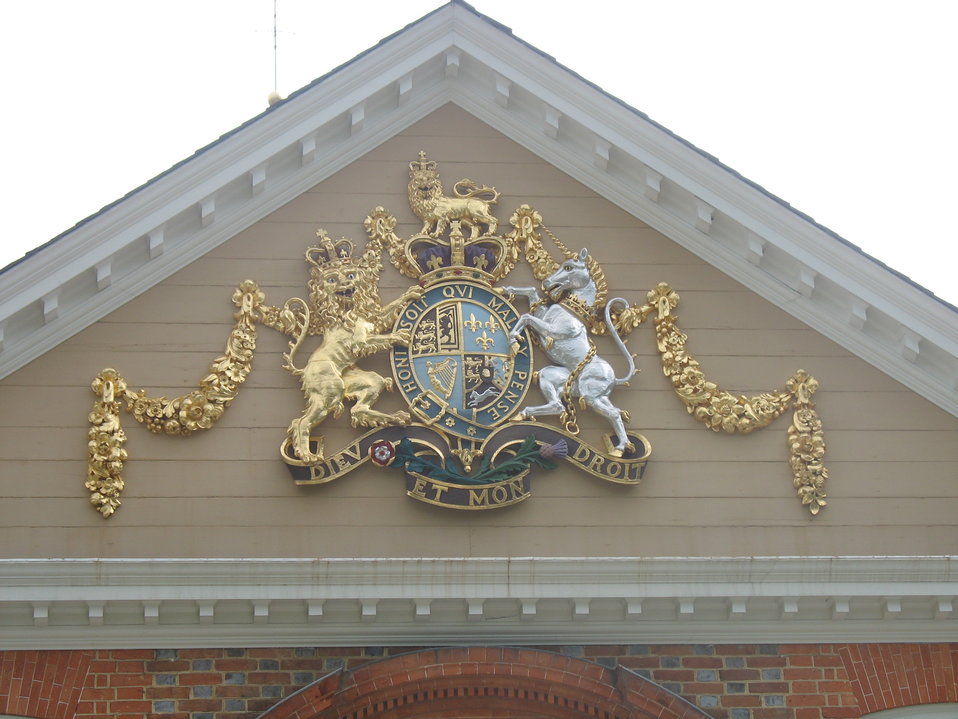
A picture of the Royal coat of arms of Great Britain of the Hanoverian period (1714 – 1801) on the Governor's Palace in Williamsburg, Virginia at Colonial Williamsburg. This is an image of a place or building that is listed on the National Register of Historic Places in the United States of America. Its reference number is 66000925.